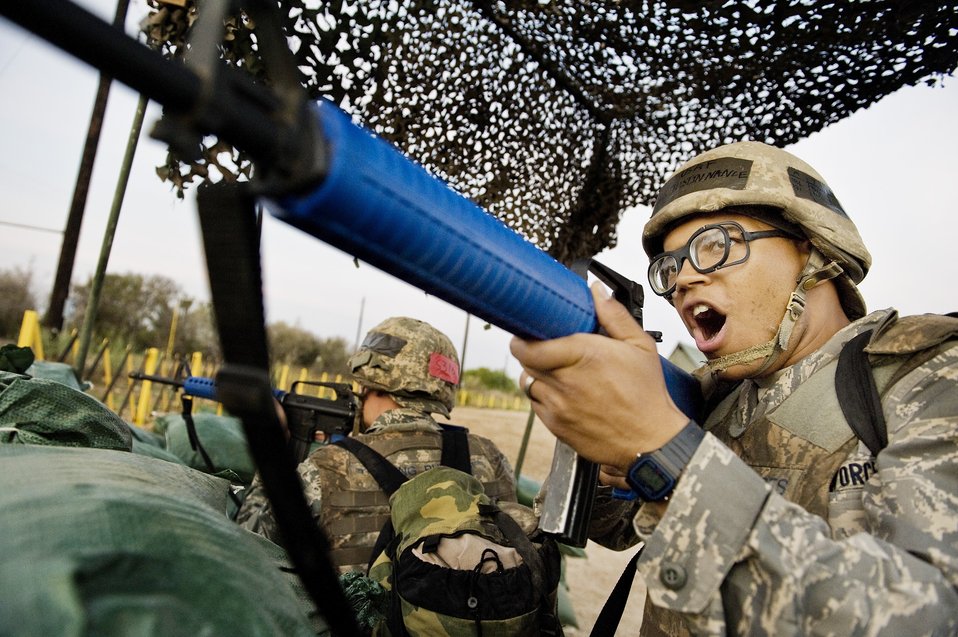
Trainees conquer the BEAST

A basic trainee warns an